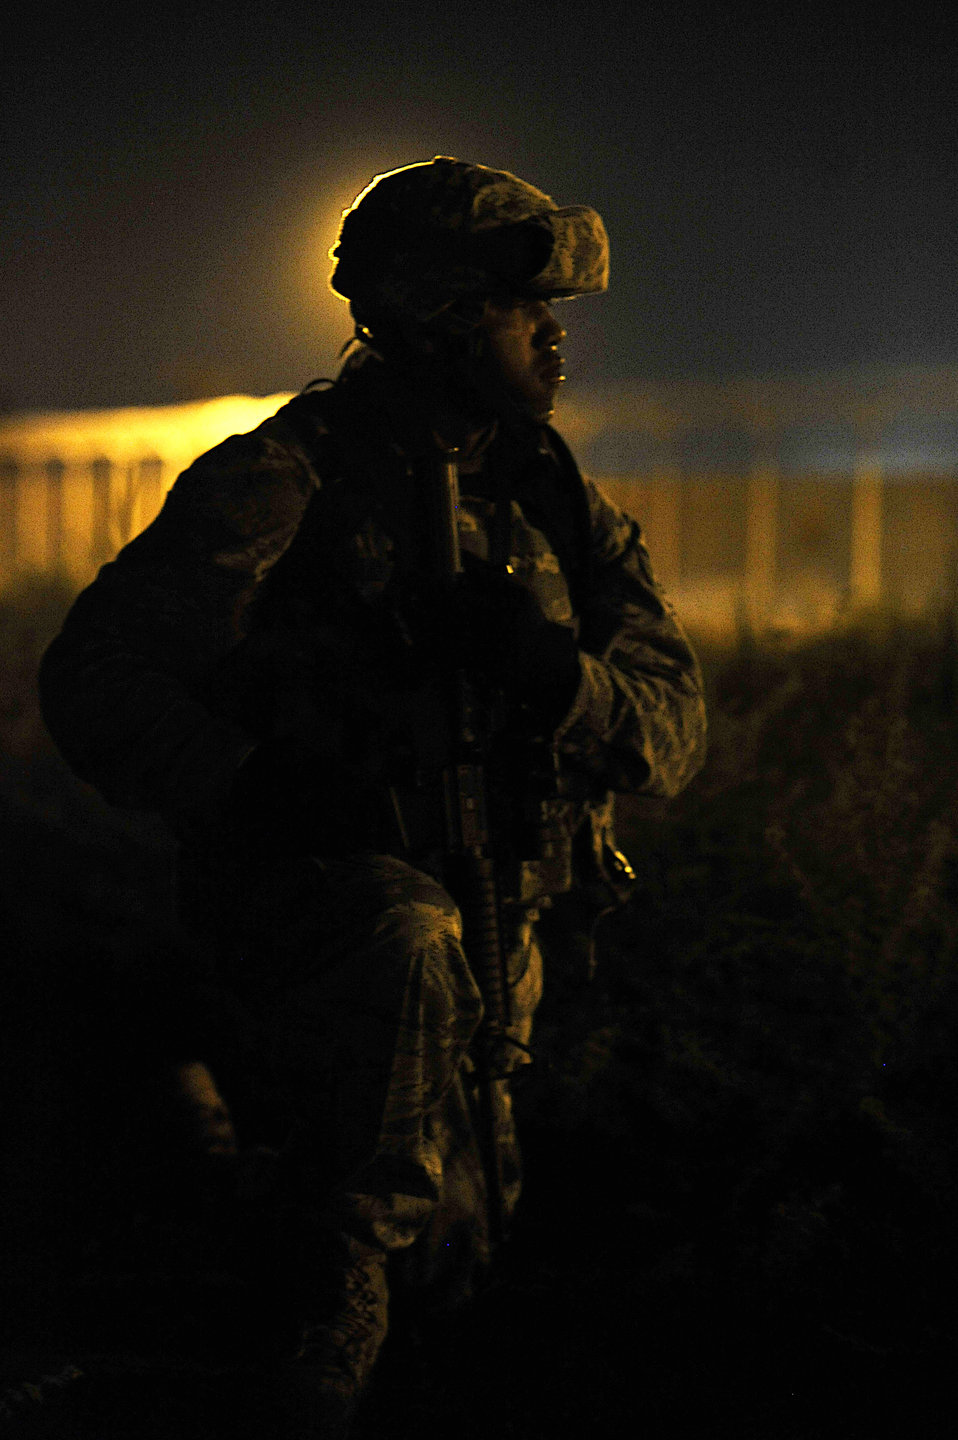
Operation Iraqi Freedom

Tech. Sgt. Bobby Howard patrols the near 36-mile perimeter of Joint Base Balad, Iraq, during Operation Lewis and Clark Sept. 11. Operation Lewis and Clark was a joint patrol in which Air Force security forces Airmen were introduced to Balad's outer perimeter, an area in which they will assume responsibility from the Army. Sergeant Howard is assigned to the 332nd Expeditionary Security Forces Squadron.